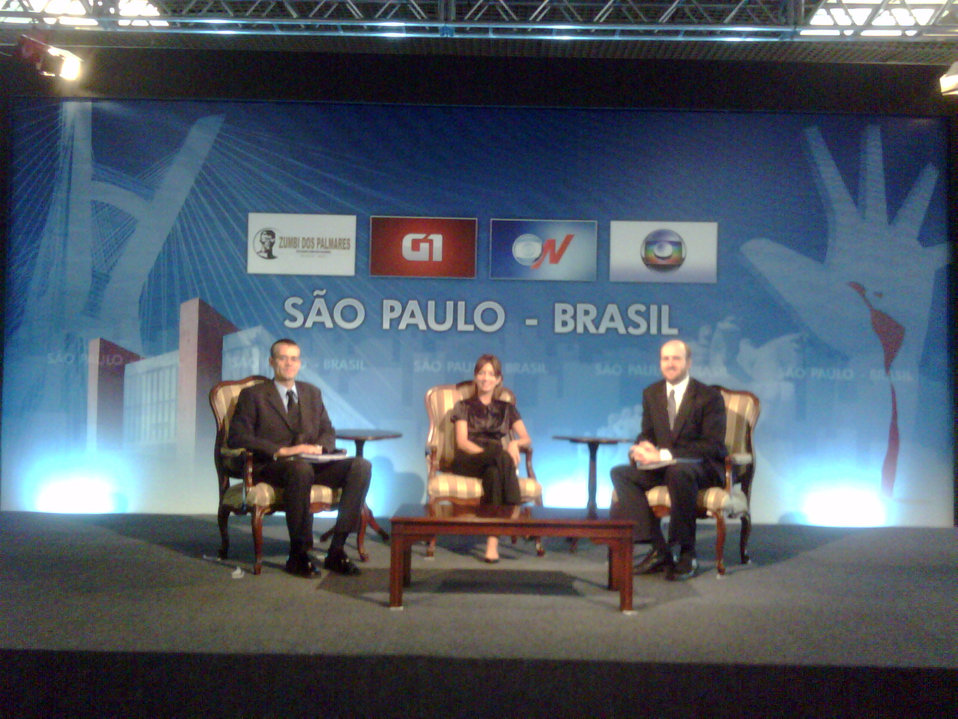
Sao Paulo Townterview Preparation

Staff take time to test out the stage before U.S. Secretary of State Hillary Rodham Clinton participates in a Townterview event at University Zumbi dos Palmares in Sao Paulo, Brazil, March 3, 2010.